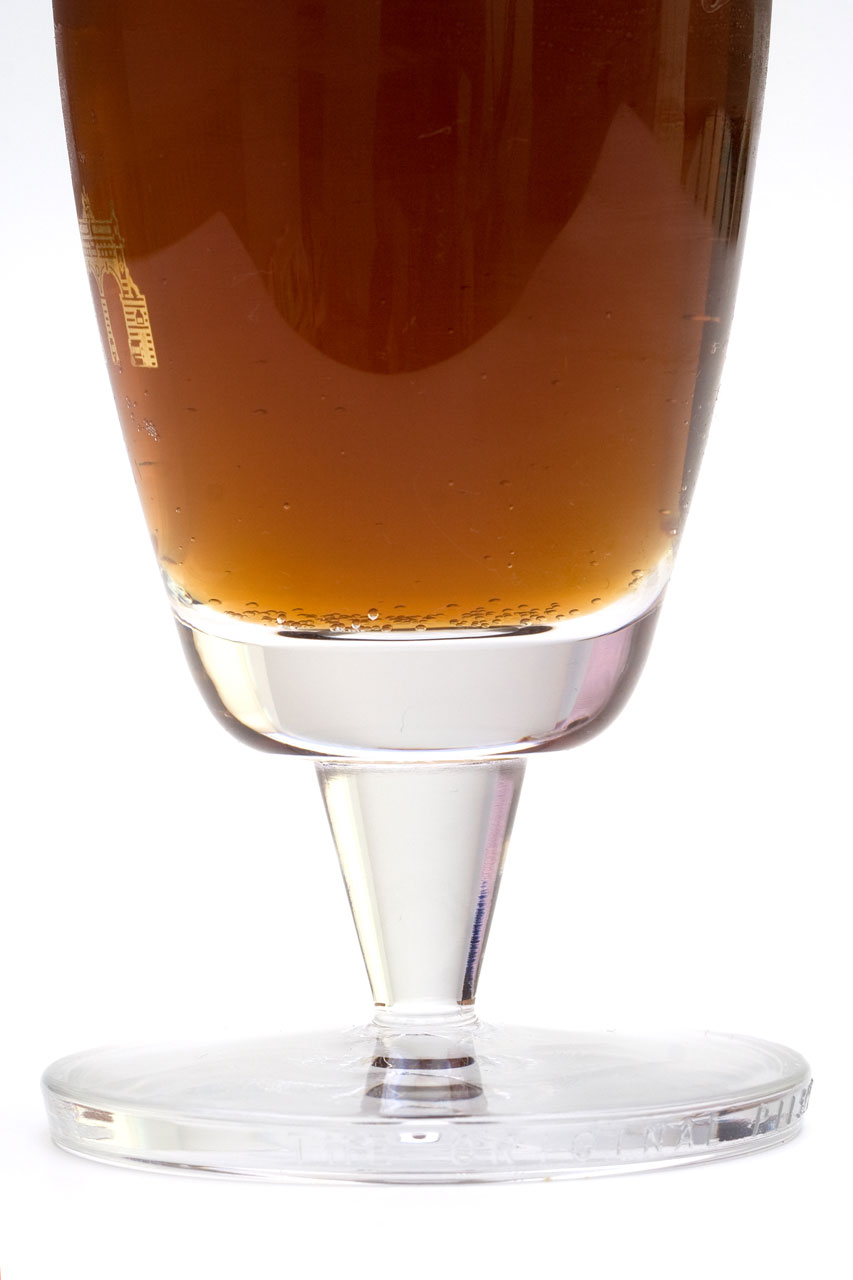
Glass of beer

A glass of dark beer on the white background.